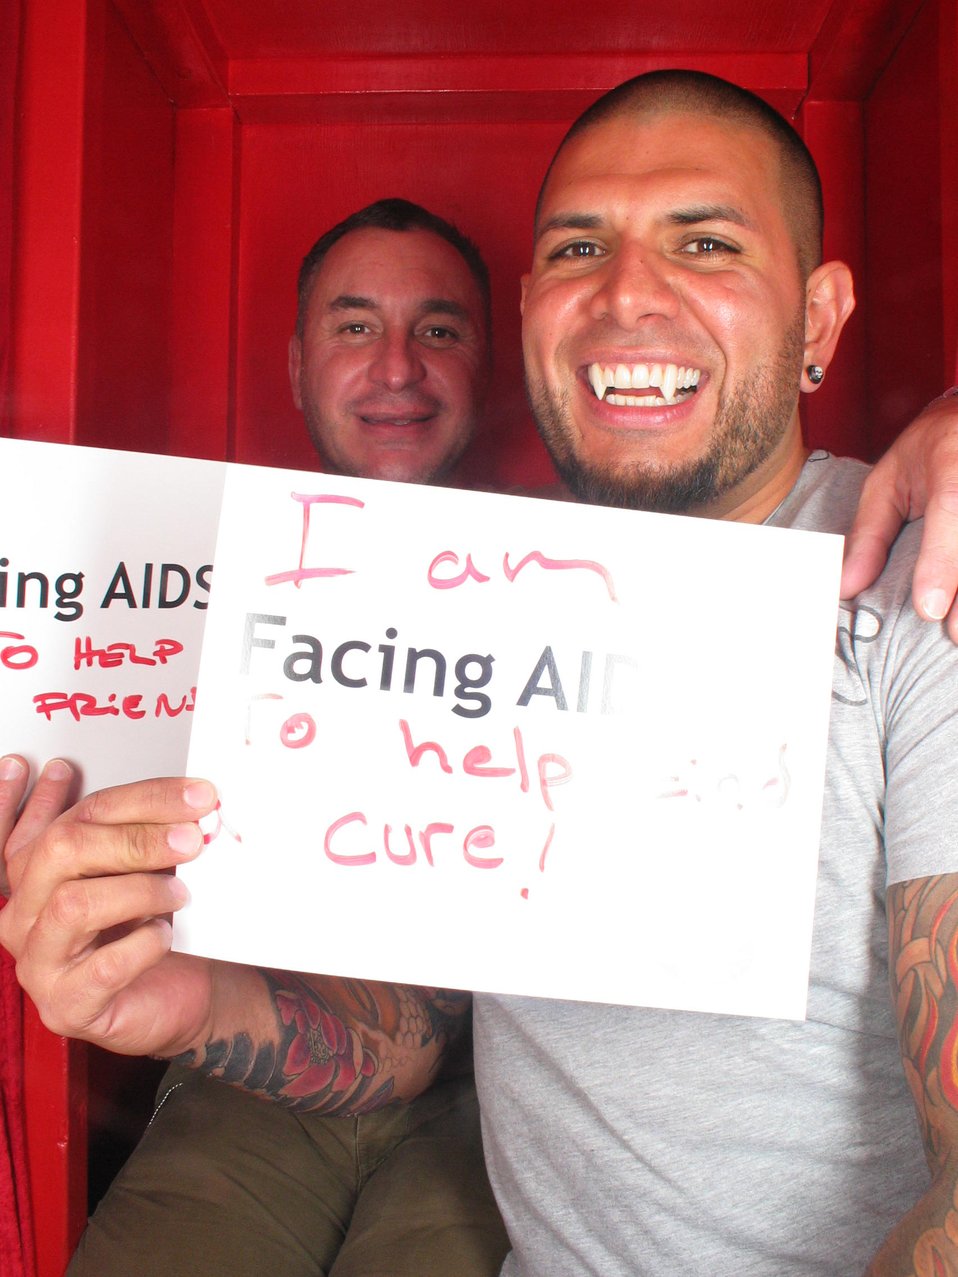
I am Facing AIDS to help find a cure!